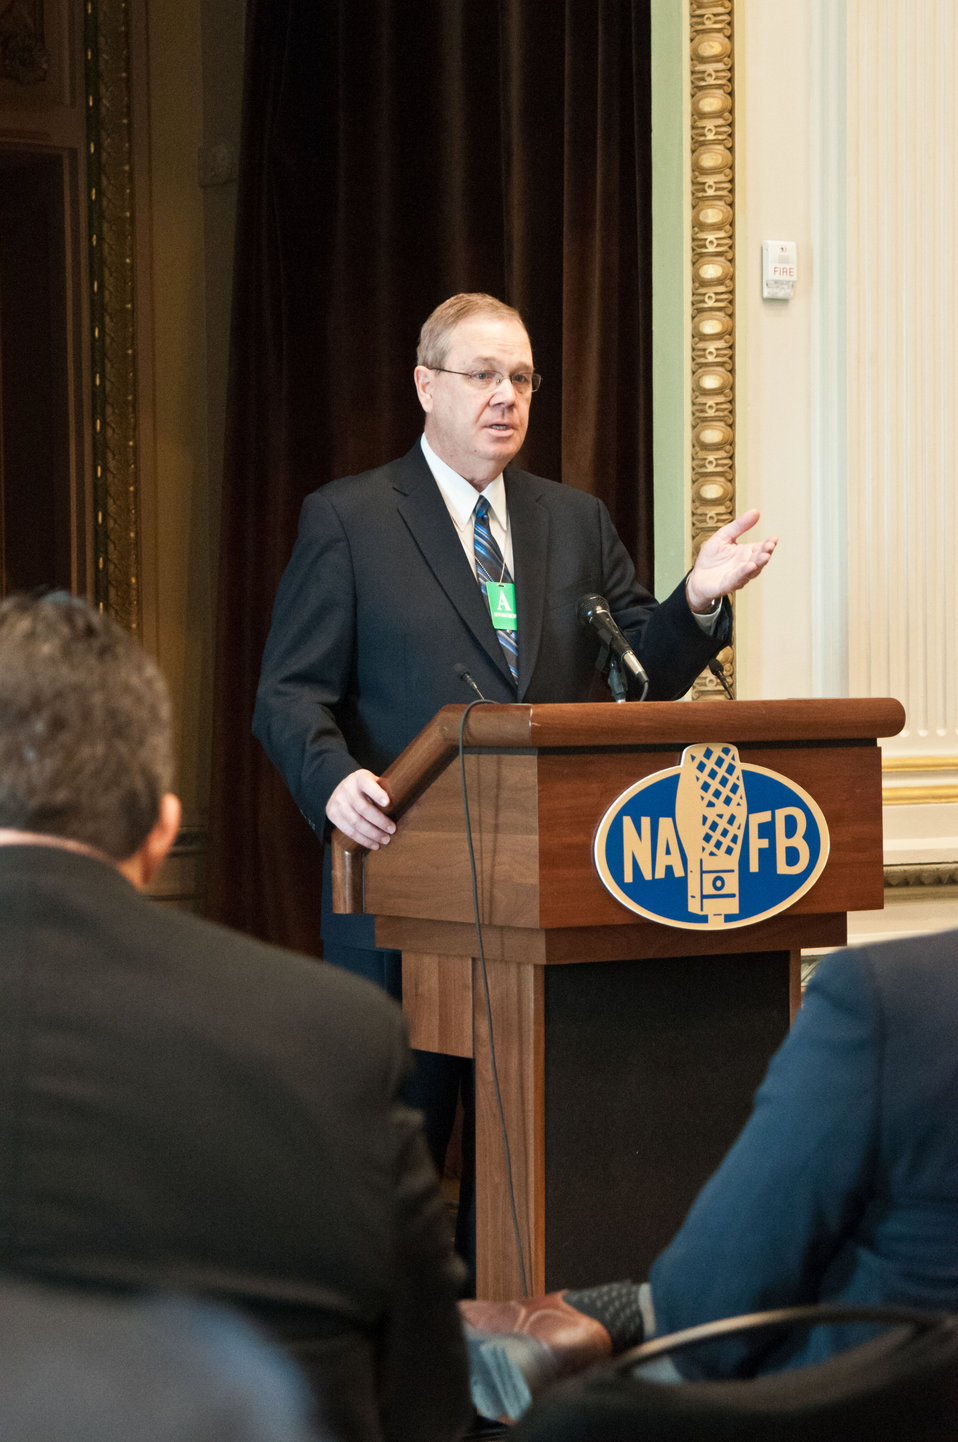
Rural Development Under Secretary Dallas Tonsager spoke about rural revitalization at the Spring National Association of Farm Broadcasters (NAFB), “Washington Watch” member retreat in Washington, D.C. This year the meeting was held in the Eisenhower Executive Office Building, Indian Treaty Room on Tuesday, April 24, 2012, featuring United Sates Department of Agriculture and Obama Administration officials. This opportunity provides an occasion to highlight efforts to rebuild and revitalize rural America, including efforts for the agricultural community. NAFB is the recognized and trusted source of agricultural and rural lifestyle information for America with approximately 200 members who broadcast via radio in nearly every state in the country.